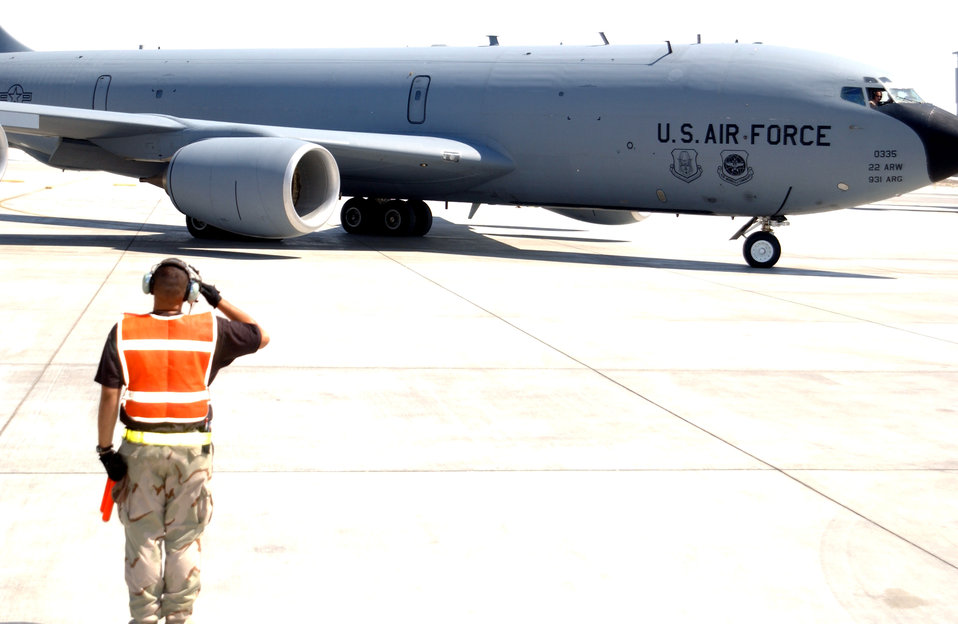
KC-135 launch

Senior Airman Ismael Hernandez salutes the crew of a KC-135 Stratotanker from the 380th Air Expeditionary Wing as it taxis at a forward-operating base in Southwest Asia. The 380th AEW is home to the largest air refueling squadron in the theater of operations. Airman Hernandez is assigned to the 380th Expeditionary Aircraft Maintenance Squadron.